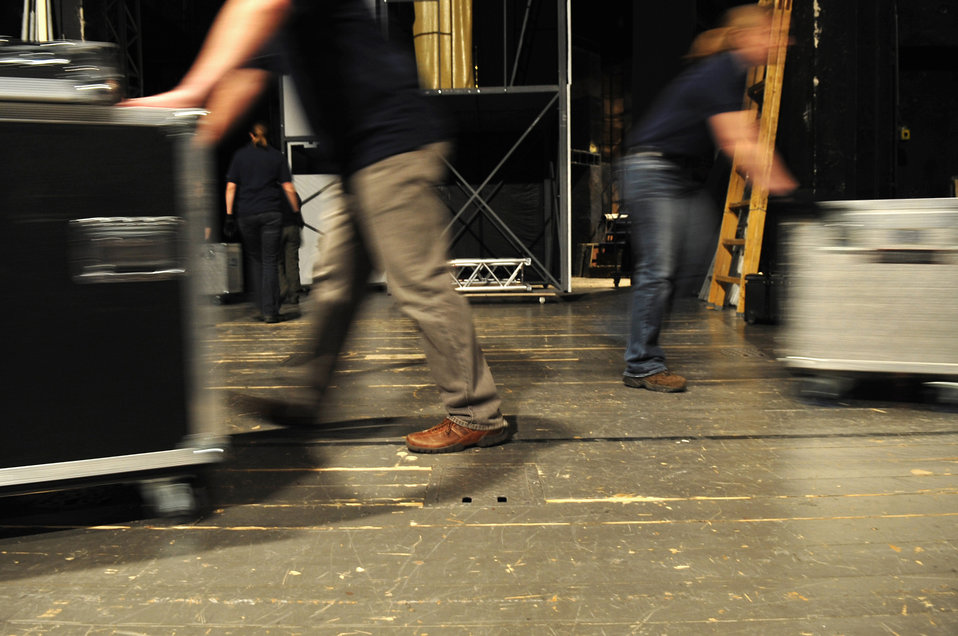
USAFE Concert Band on tour

Members of the United States Air Forces in Europe Band set up the stage before a performance May 4, 2011, in Bratislava, Slovakia. The USAFE concert band is on tour through three countries, performing at seven locations as part of a building partnerships capacity and community outreach initiative.